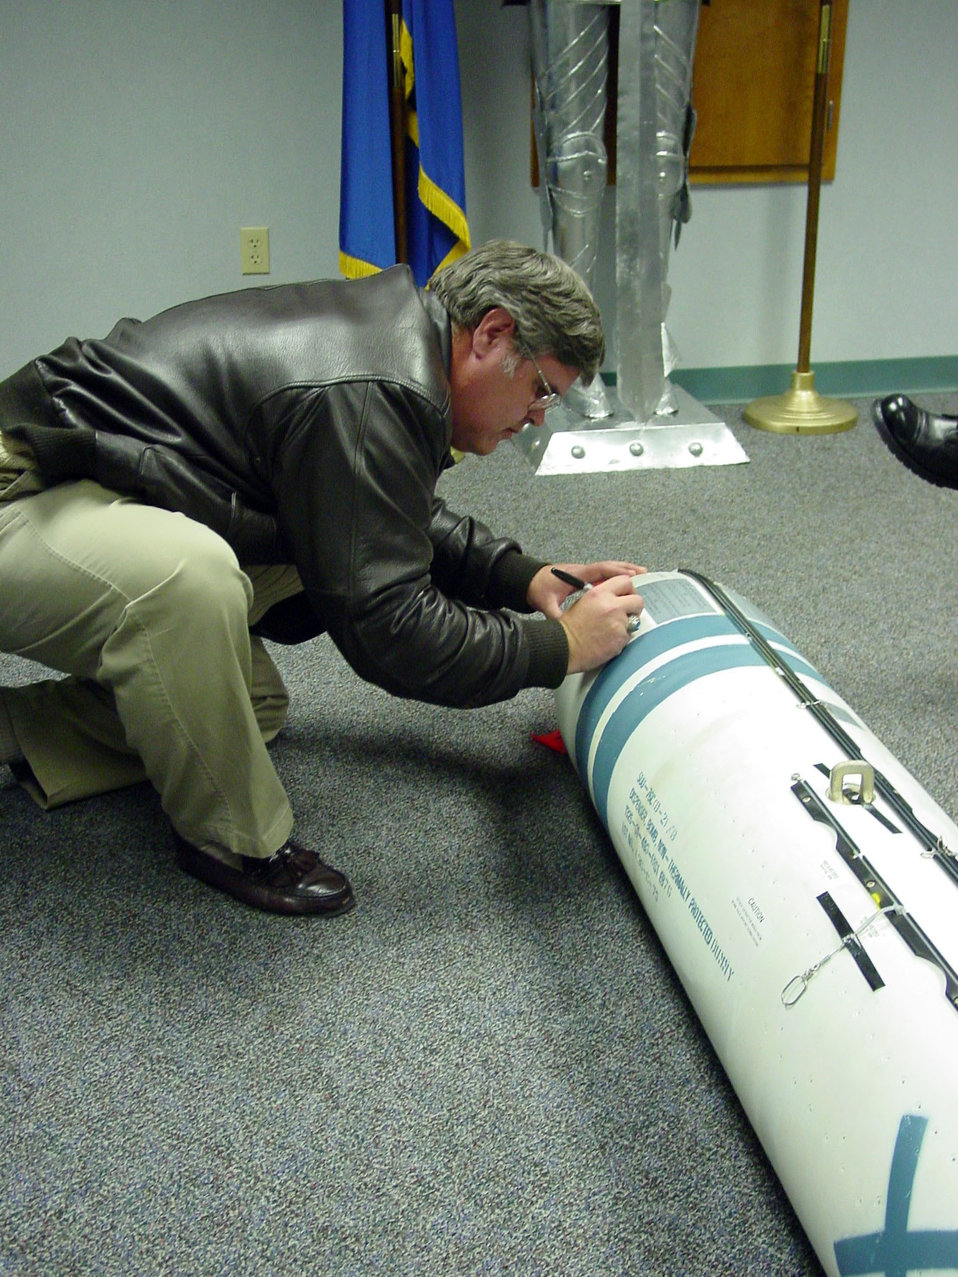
Battlelab turns ideas into innovation

LACKLAND AIR FORCE BASE, Texas - Retired Master Sgt. Chuck Doig, formerly of the Air Intelligence Agency psychological operations division, signs a display model of the PDU-5/B leaflet bomb. Sergeant Doig submitted an idea to the Air Force Information Warfare Battlelab to convert a Rockeye cluster bomb canister into a new leaflet delivery system.